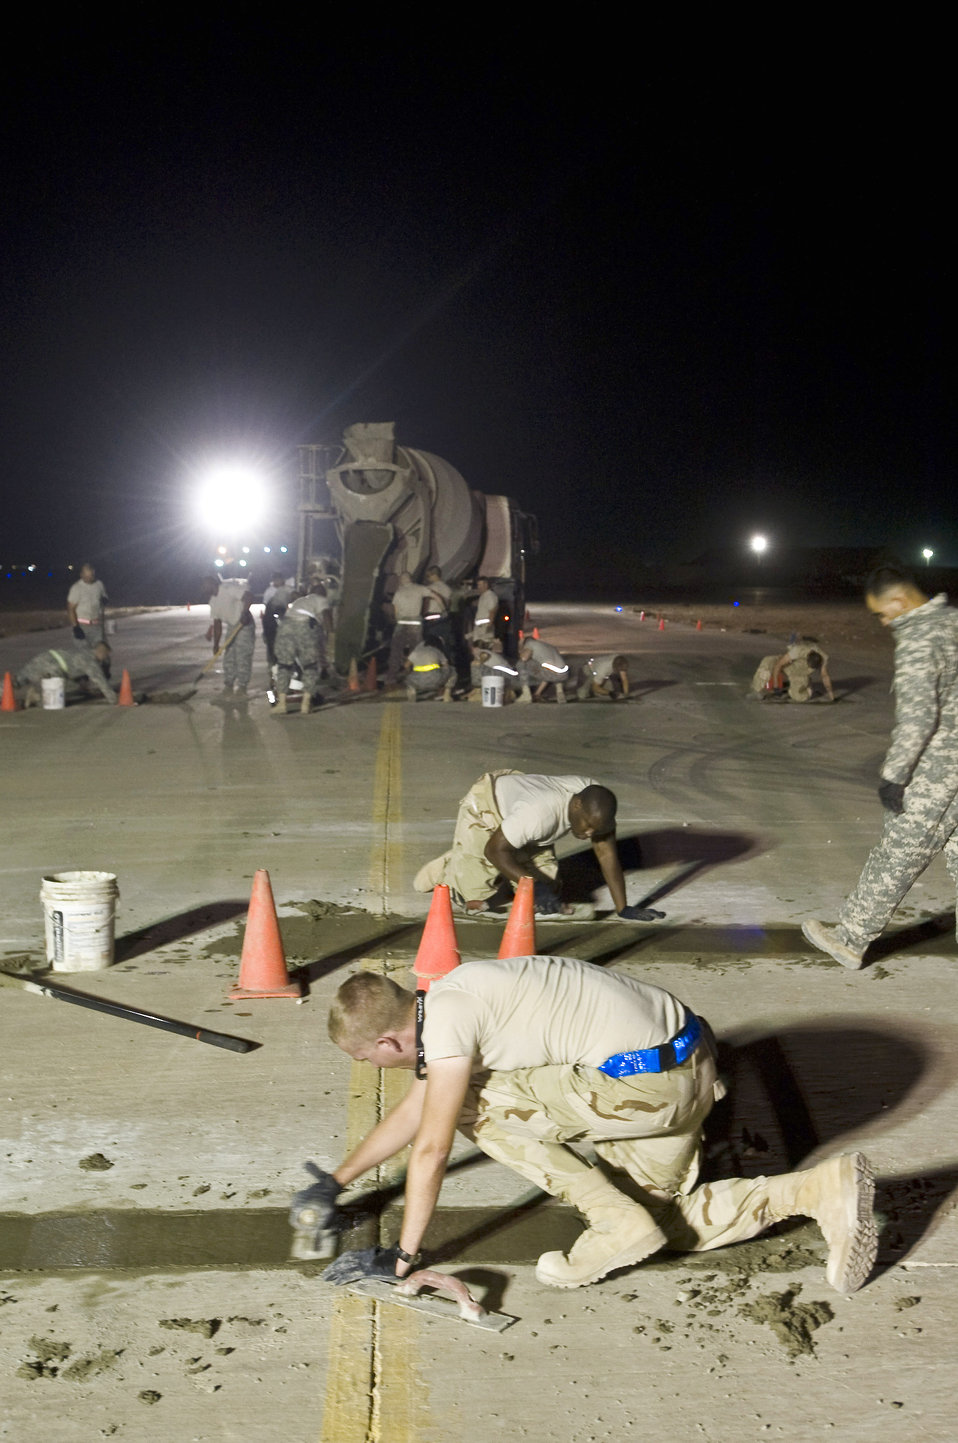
Solid foundation

Airmen with the 407th Expeditionary Civil Engineer Squadron repair a section of runway Sept. 22 at Ali Base, Iraq. Extreme heat, along with normal wear and tear, can damage portions of the flightline, making it unsafe for aircraft.